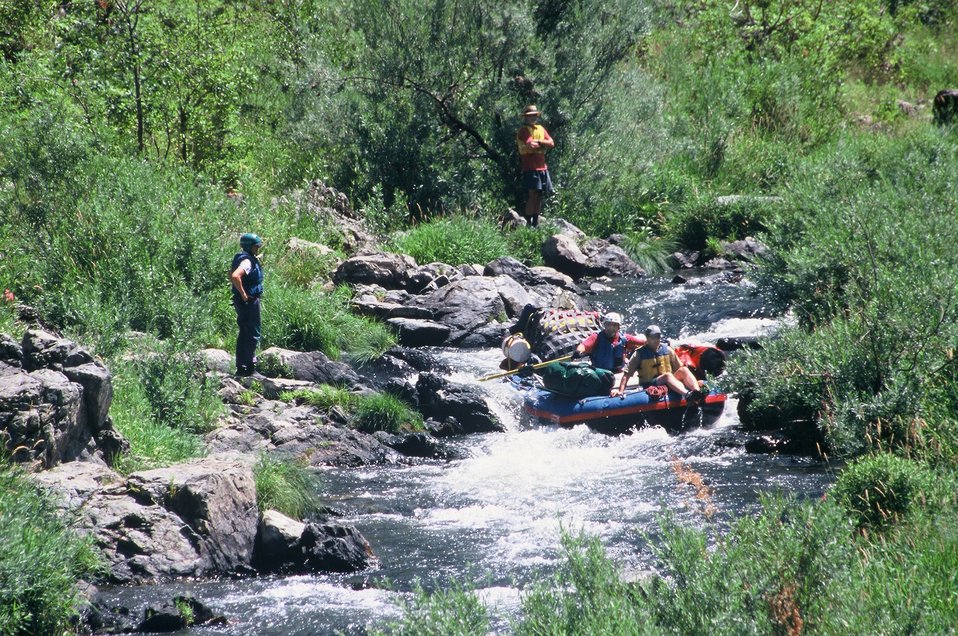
Rainie Falls Fish Ladder